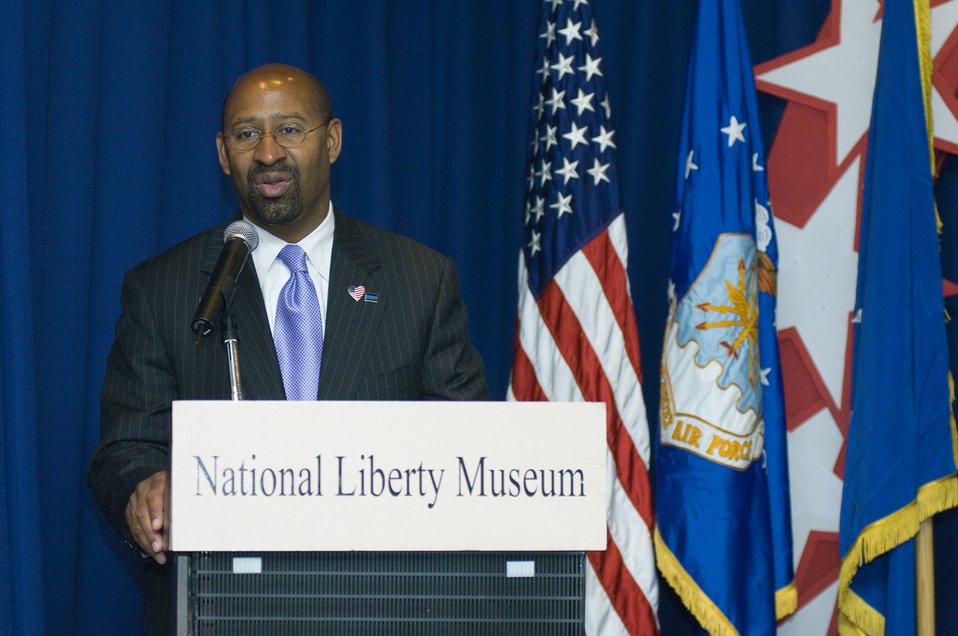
Officials explain humanitarian operations during Air Force Week in Philadelphia

Philadelphia Mayor Michael A. Nutter provides opening remarks for the Global Presence Seminar lead by Lt. Gen. Christopher A. Kelly May 29 at the National Liberty Museum in Philadelphia. The seminar held during Air Force Week in Philadelphia highlighted heroism and humanitarian
actions by the Air Force worldwide. General Kelly is the vice commander of Air Mobility Command from Scott Air Force Base, Ill.